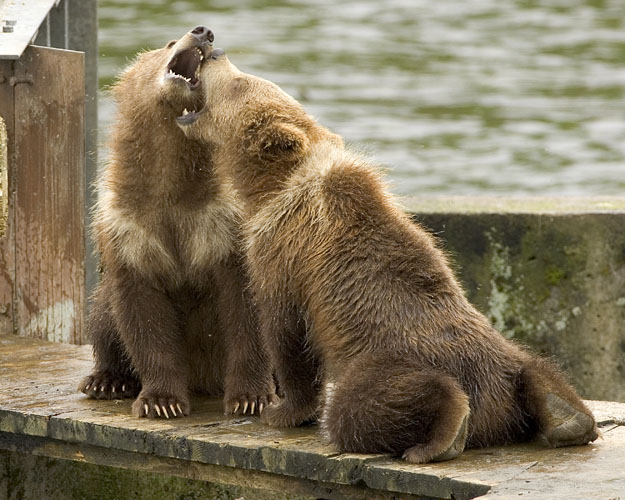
Wildlife of Kodiak Refuge